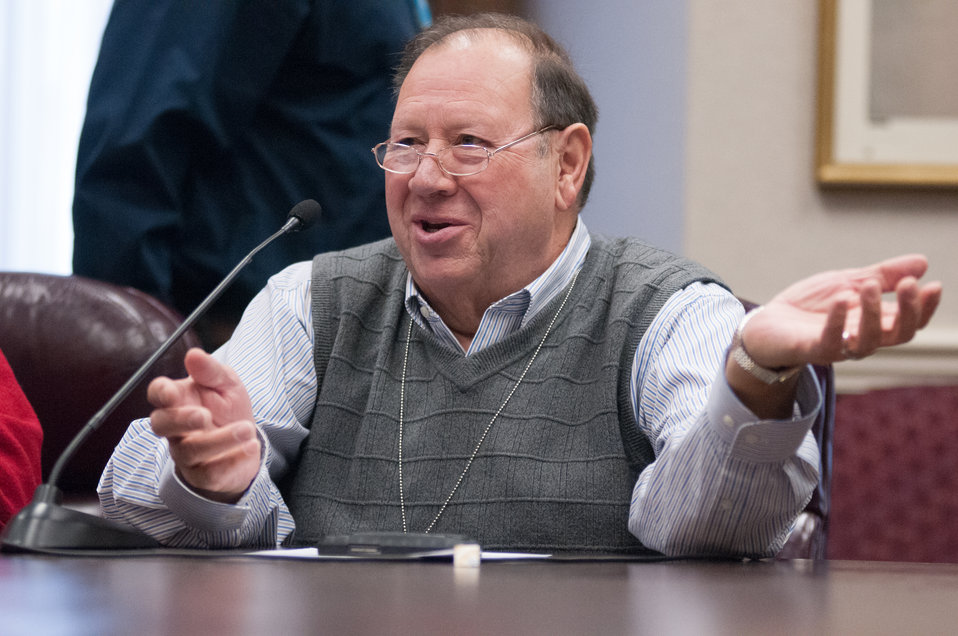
Bay Mills Community College President Michael Parish, Brimley, Michigan, presents some of his college's needs to U.S. Department of Agriculture Senior Advisor to the Secretary on Tribal Relations and Office of Tribal Relations Acting Director Max Finberg, during the USDA and American Indian Higher Education Consortium Leadership Group Winter Meeting, at the USDA Whitten Building Williamsburg Room, in Washington D.C., on Friday, Feb. 8, 2013.